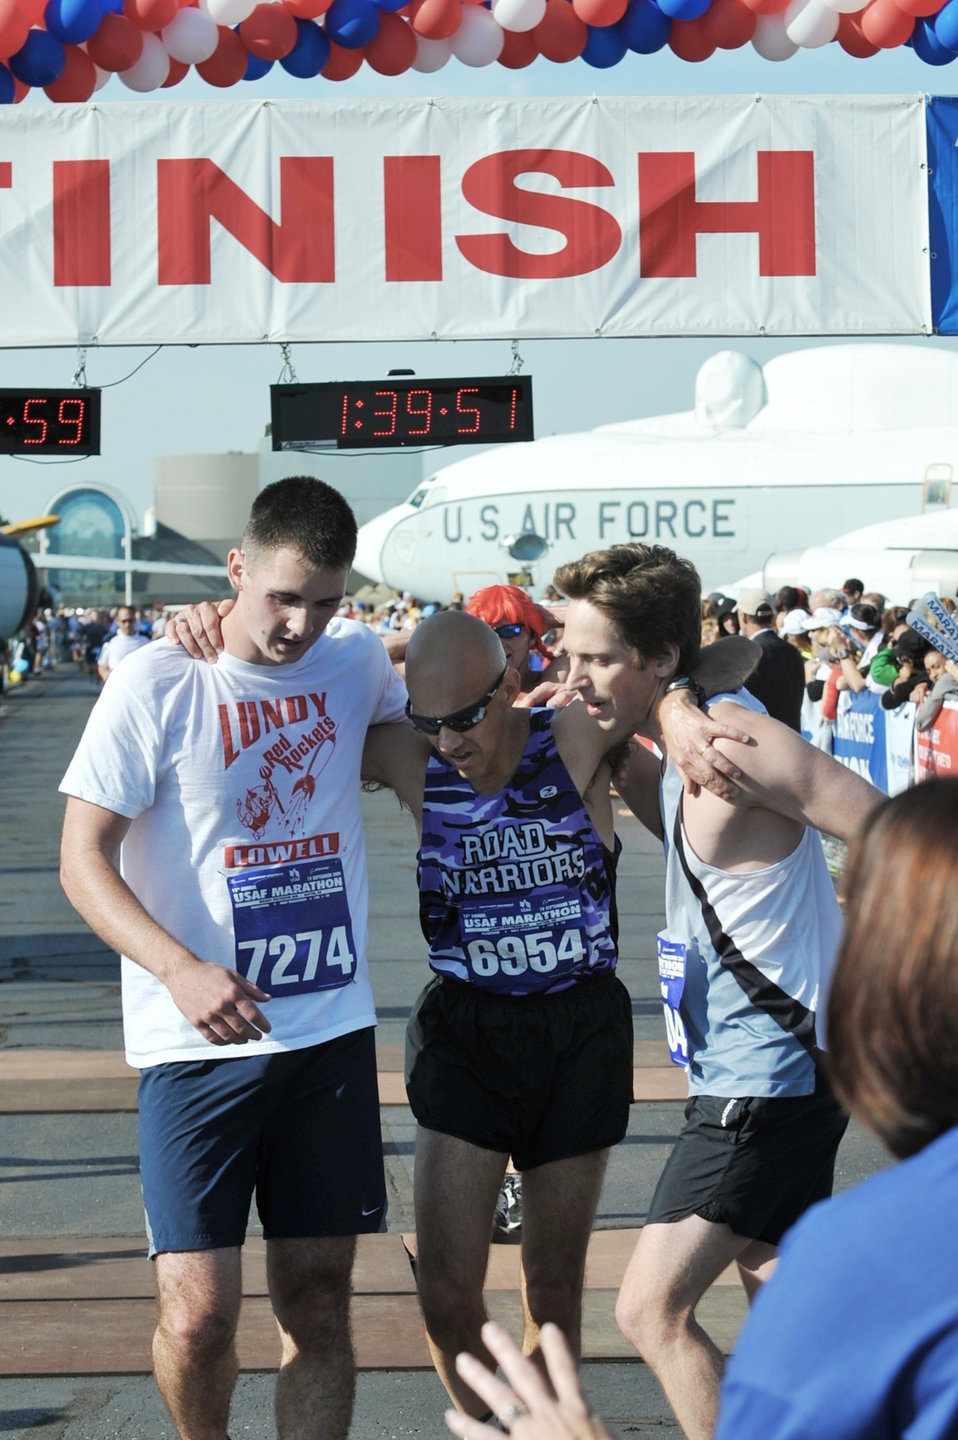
Wingman helps cancer survivor meet Air Force Half Marathon goal

Master Sgt. Mike Sanders (center) gets some help from 2nd Lt. Evan McNichols (left) and Lieutenant McNichols' cousin, Ben, after finishing the Air Force Half Marathon Sept. 19, 2009, at Wright-Patterson Air Force Base, Ohio. Sergeant Sanders ran the event one year and eight months after beating cancer. Sergeant Sanders had served as an instructor with the University of Oregon's Air Force ROTC program, and Lieutenant McNichols was a cadet there and they have been each other's wingman since.